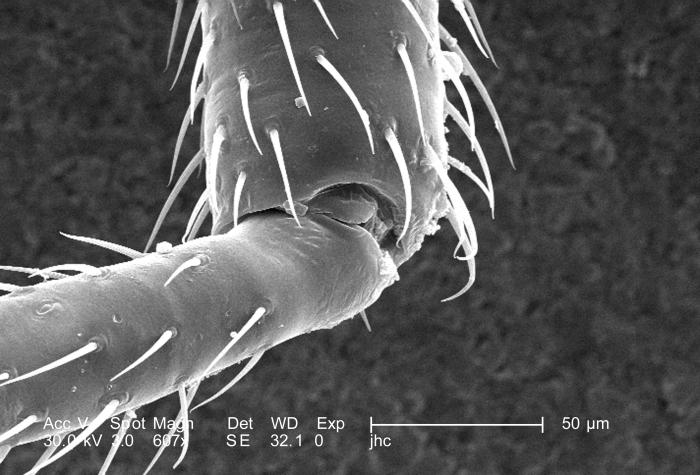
Under a moderately high magnification of 607X, this scanning electron micrograph (SEM) revealed some of the morphologic features located upon the surface of one of the two antennae used by an unidentified 1/4"-sized black flying insect with a small red mark on its dorsum, in order to detect changes in the organism's environment such a wind speed and direction, chemical queues, i.e., pheromones, and variations in temperature. The antenna is composed of three main regions: scape, pedicle, and flagellum. The scape attaches the sensory organ to the head region, and as seen here, the pedicle joins the distal, jointed flagellum to the scape.